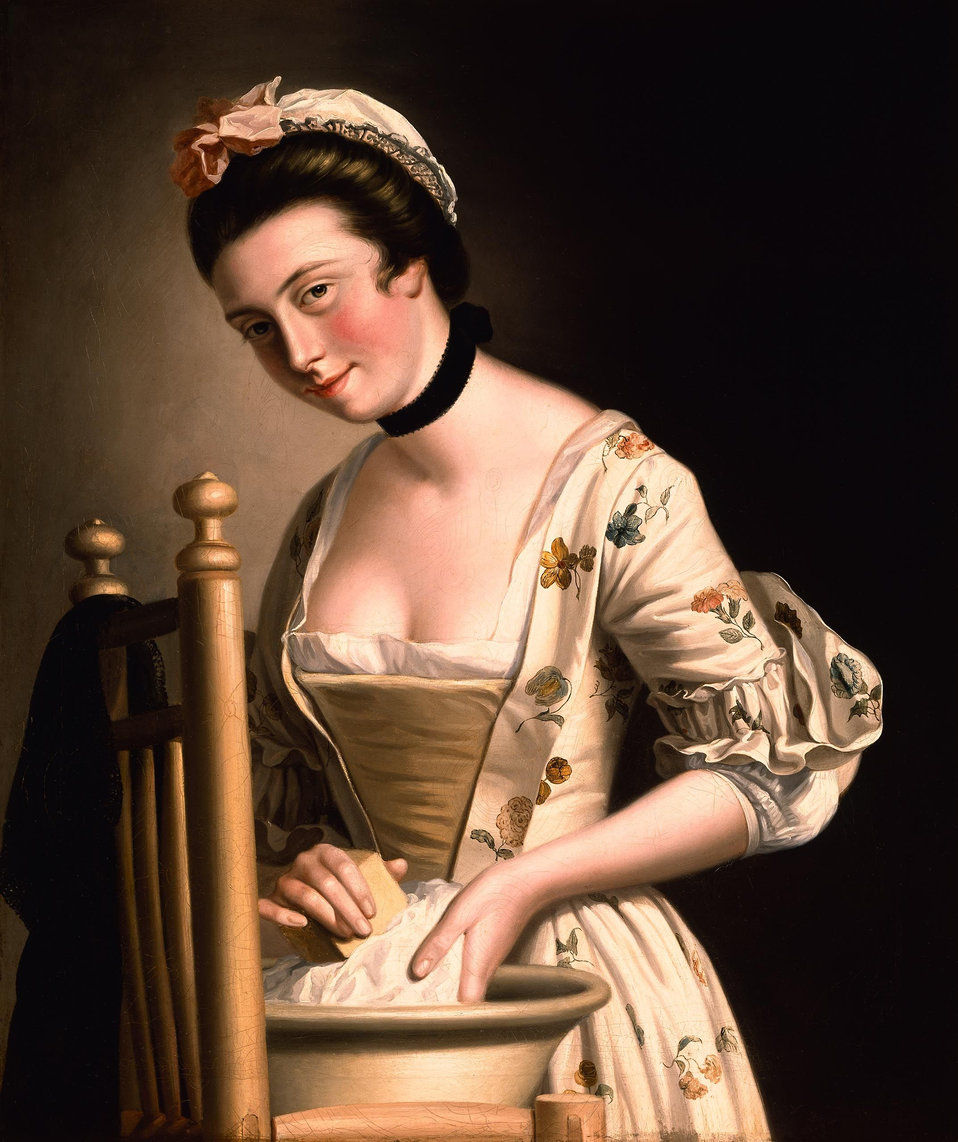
A Woman doing Laundry by Henry Robert Morland